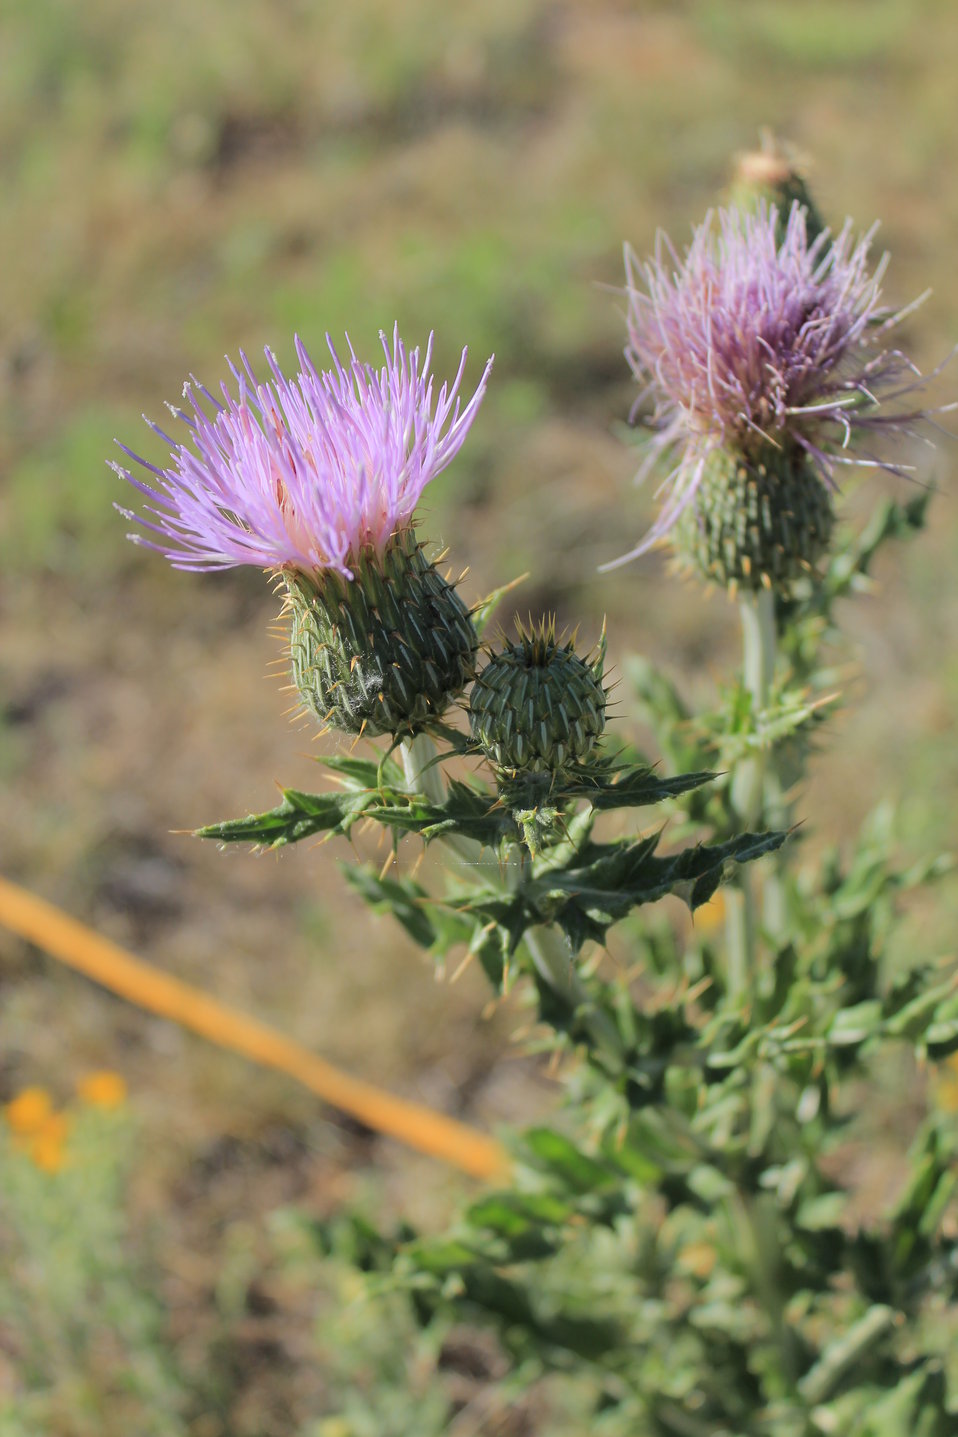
Wavyleaf Thistle

This native thistle can be found at at elevations up to 9,500 ft and should not be confused with other non-native noxious thistles such as Canada Thistle.

Location: Rocky Mountain Arsenal NWR

Credit: Jaclyn Kircher / USFWS

Photo Contest Entry #32